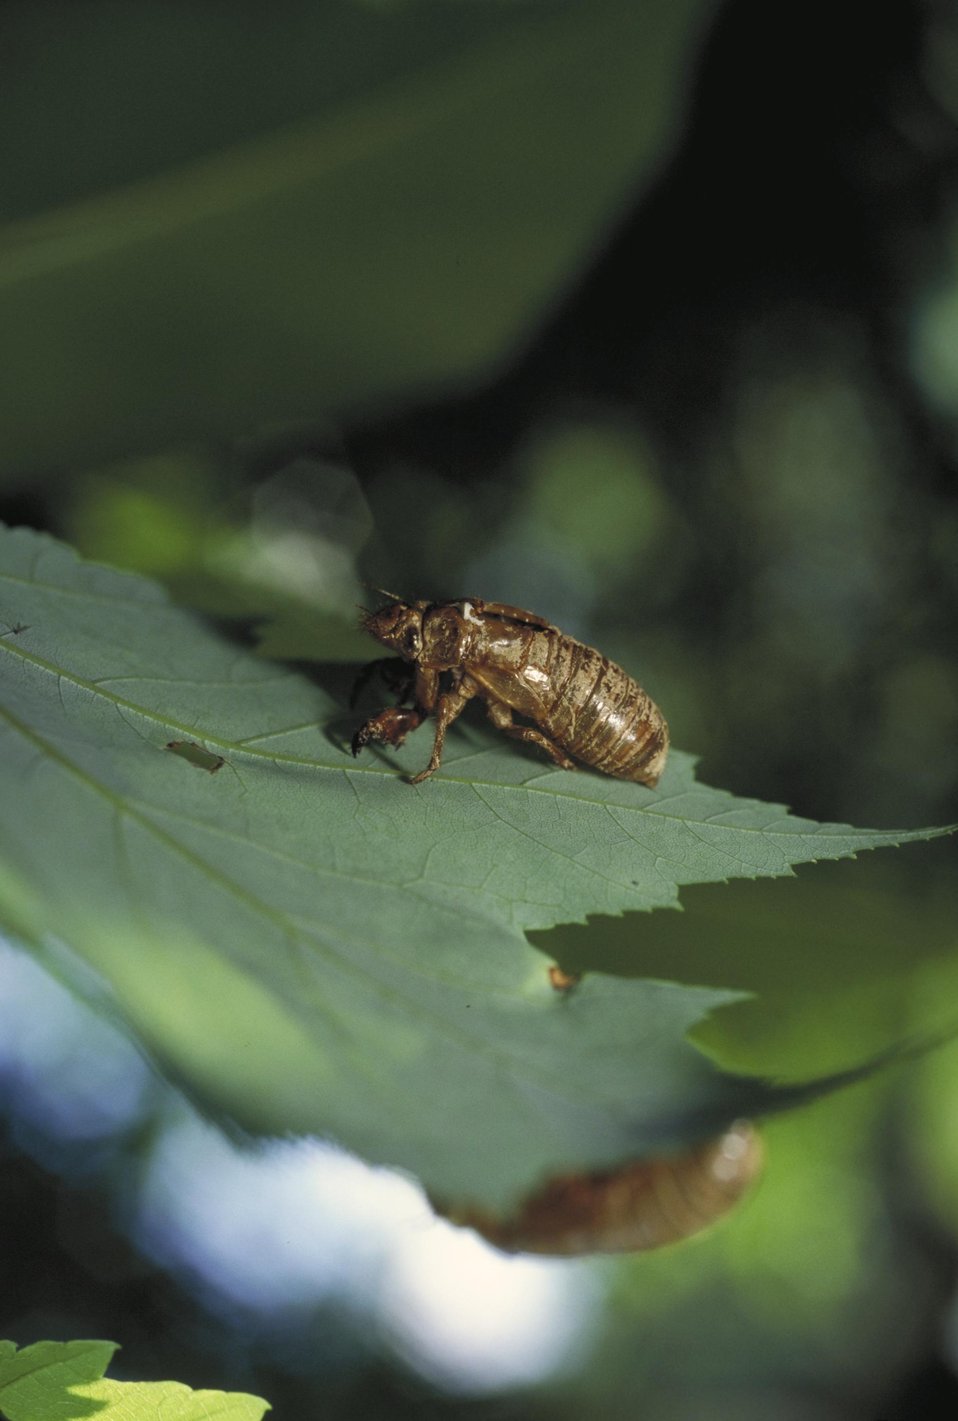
A Cicada skeleton remains on a leaf. In the early spring of 2013 the eastern half of the U.S. will see and hear the emergence of the 17-year Cicada (Magicicada). The 17-year Cicada is a large insect with a black body, red eyes, and delicate wings about an inch and a half long. The Cicada will emerge from the ground as nymphs, climb onto trees and shed their skins. The males will then sing loudly to attract female mates. Once mated the females lay approximately 400 to 600 eggs in tree branches before they die. The nymphs hatch and burrow into the ground and live underground for the next 16 years sucking sap out of tree roots. The cicada’s above ground cycle lasts about a month before they die. Cicada’s have no sting or bite and are harmless to humans and pets, however the constant singing is annoying.